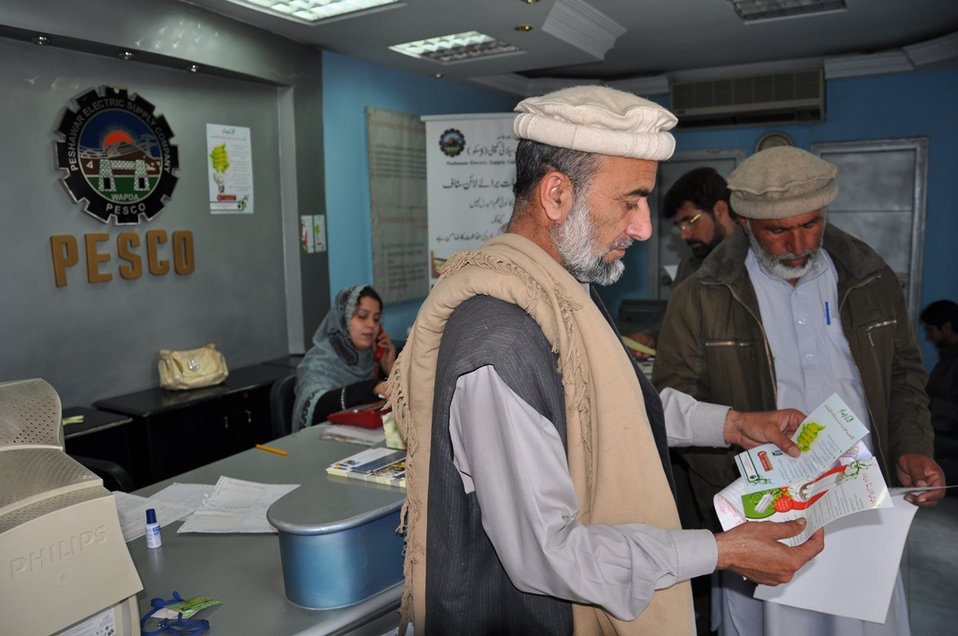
USAID helps power distribution companies to reach out consumers

The USAID Power Distribution Program is facilitating PESCO’s PR department in reaching out to consumers, through the provision of consumer outreach material. This material better assists PESCO in informing consumers about energy conservation, electricity theft and energy efficiency. PESCO is utilizing this material in its own conservation campaigns which will effectively contribute in PR capacity building and in promoting a softer image of the company.